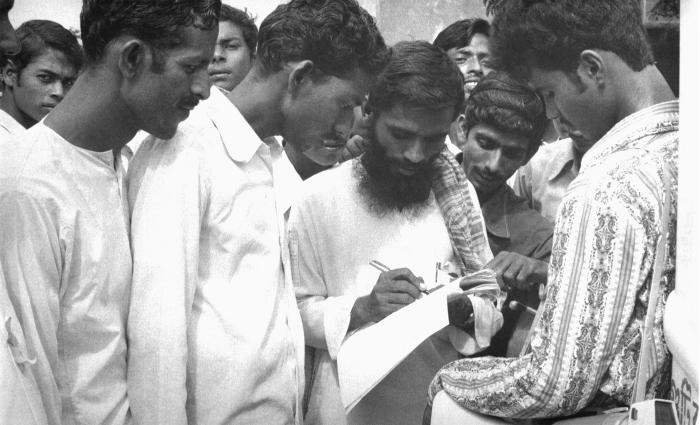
Surrounded by community members, this village resident was shown filling out the all-important 'smallpox containment book' for a community volunteer. The containment book recorded all of the names of anyone living in, or within a half a mile of an infected home, and subsequently all those listed were vaccinated against smallpox. Those vaccinated were followed until a 'successful' vaccination was observed.